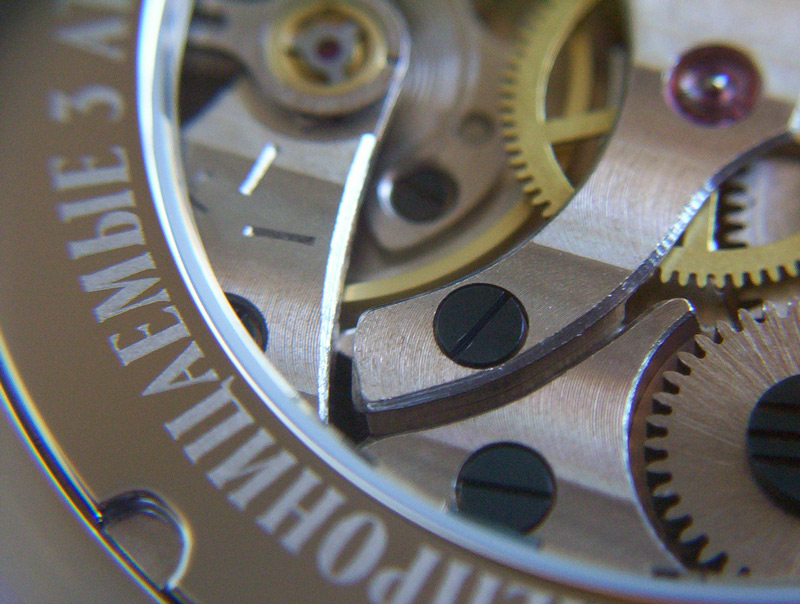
'Sibera' model, crystal back view of finished movement.